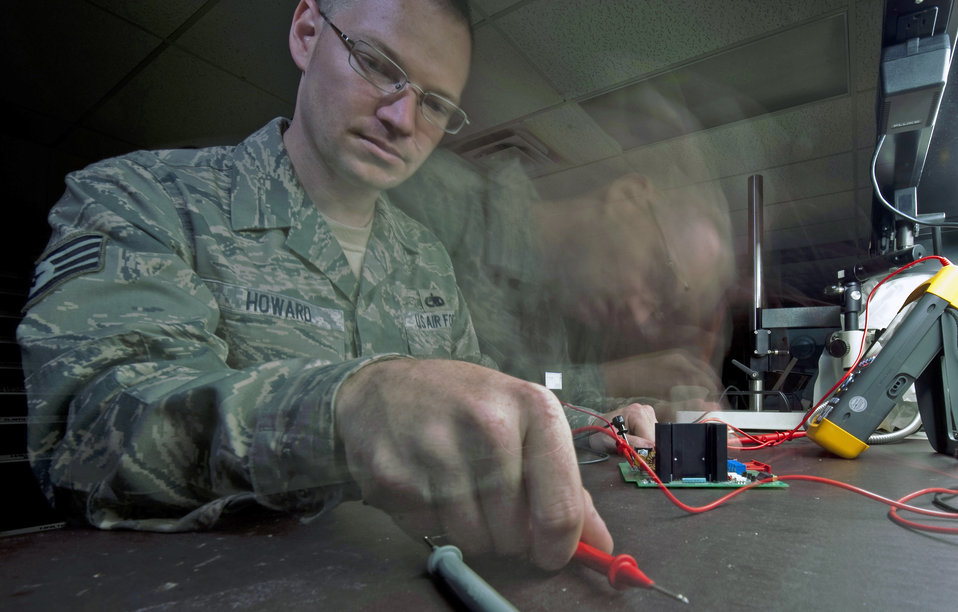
Holloman AFREP

Staff Sgt. Thomas Howard uses a multimeter to test a component Sept. 21, 2010, at Holloman Air Force Base, N.M. The Air Force Repair Enhancement Program shop repairs otherwise unserviceable equipment and finds innovative ways to improve the repair process. Sergeant Thomas is a 49th Maintenance Group Air Force Repair Enhancement Program technician.